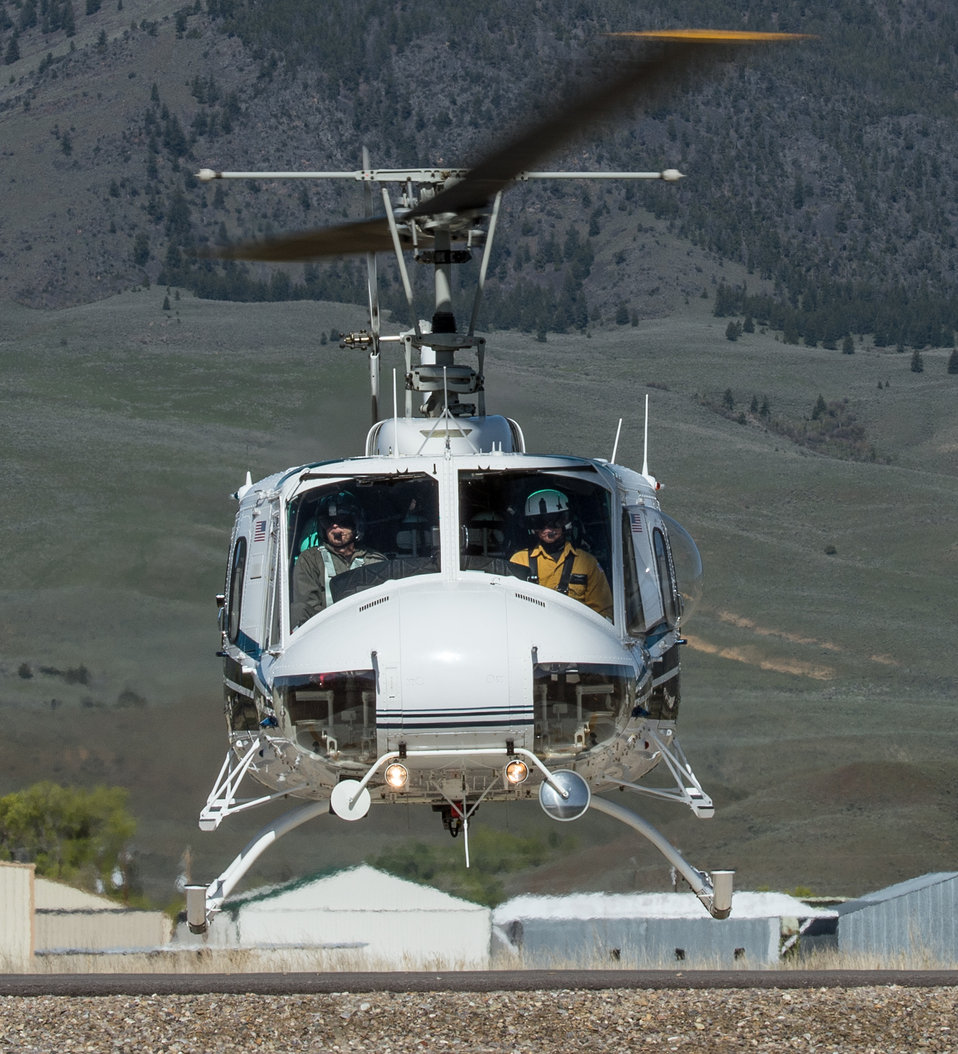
Idaho Helicopters, Inc., Assistant Chief Pilot JT Theis (right) lands a Bell 205A-1 helicopter for veteran wildland firefighter rappellers to board for training at the U.S. Department of Agriculture (USDA) U.S. Forest Service (USFS) National Helicopter Rappel Program’s Rappel Academy at Salmon Air Base in Salmon, ID on Wednesday, May 14, 2014. From May 12, 2014, 72 veteran rappellers from all over the nation, 30 support staff, and three helicopters with flight crews attend the training at Salmon Air Base. Participants will rappel into the Perreau Creek area. The annual training is delivered in accordance with the National Rappel Operations Guide; strengthen leadership, teamwork, and communications within the rappel community, and produces quality aerial delivered firefighters for use in fire and aviation operations. The USDA Forest Service National Helicopter Rappel Program’s primary mission is initial attack. Rappel crews may be utilized for large fire support, all hazard incident operations, and resource management objectives.